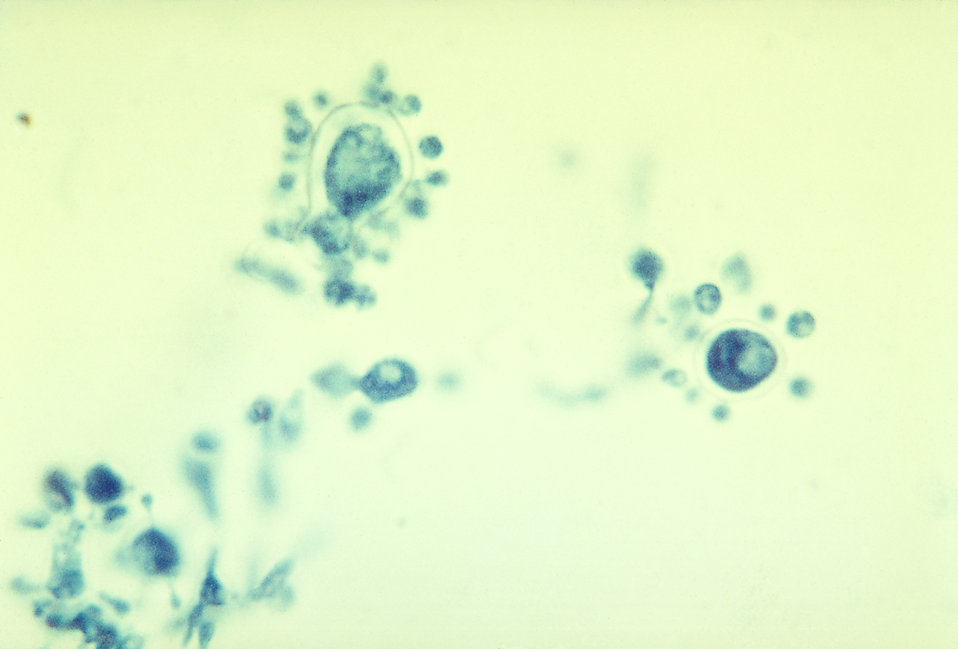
This photomicrograph depicts budding cells of the fungus Paracoccidioides brasiliensis during its yeast phase.